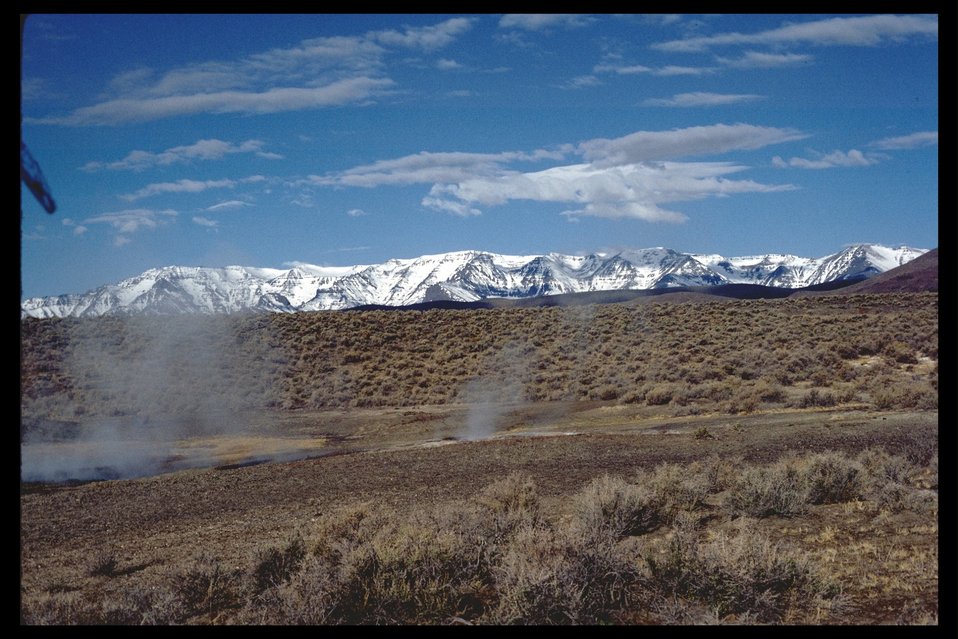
East Alvord at Mickey Hot Springs looking at Steens with hot springs in the foreground. (WSA 2-73A)